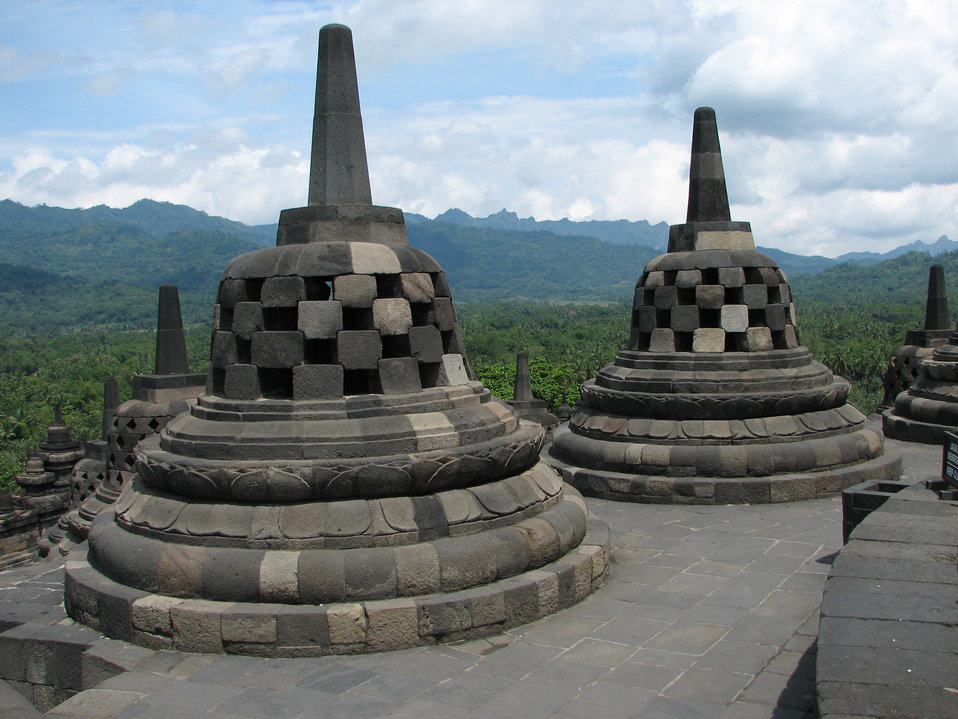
Borobudur

Stupas at borobudur temple.